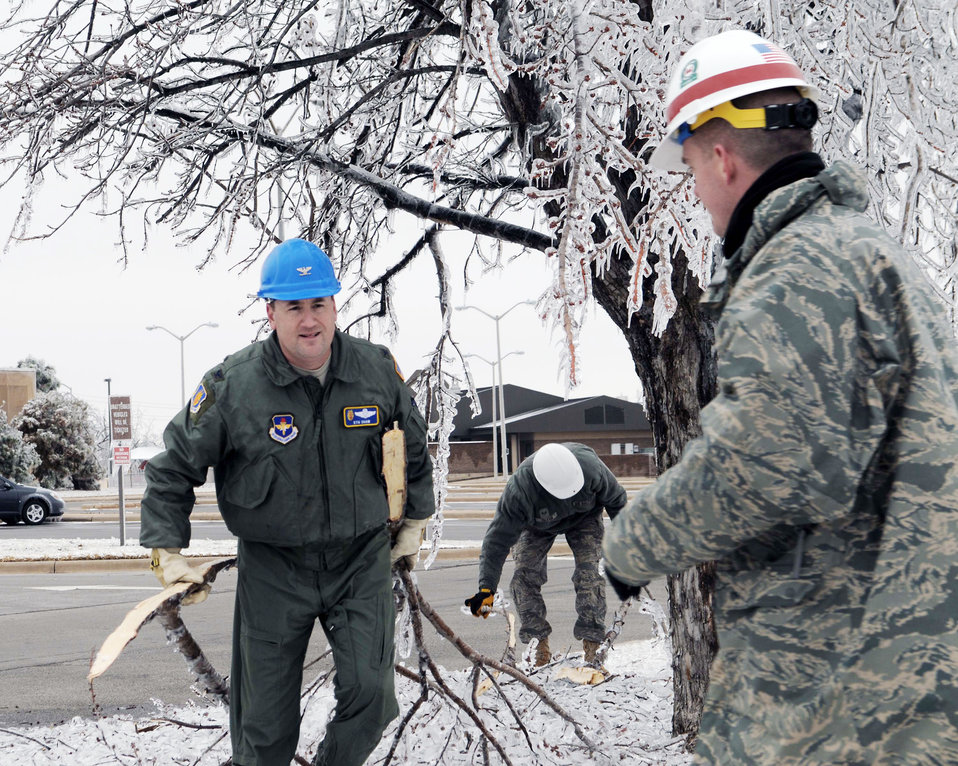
Altus training operations begin to recover after ice storm

(From left) Senior Airmen Raymond Salazar and Ryan Gava and Airmen 1st Class Chris Schaaf and Thomas Baszler raise the flag at the Wings of Freedom Park on Feb. 3, 2010, following an ice storm at Altus Air Force Base, Okla.